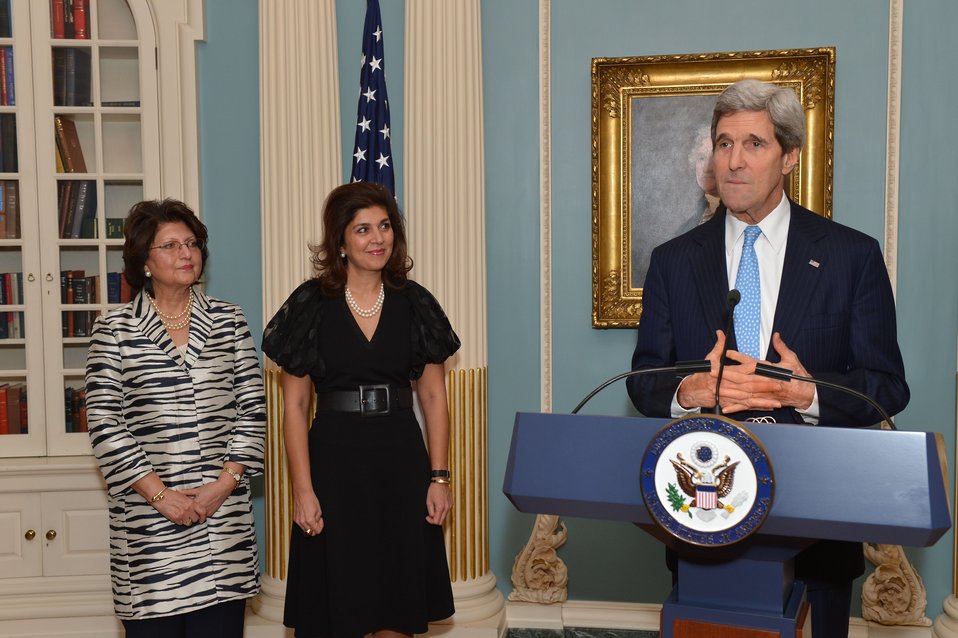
Secretary Kerry Delivers Remarks at a Farewell Reception for Special Representative Pandith

U.S. Secretary of State John Kerry delivers remarks at a farewell reception for departing Special Representative to Muslim Communities Farah Pandith at the U.S. Department of State in Washington, D.C., on January 27, 2014.